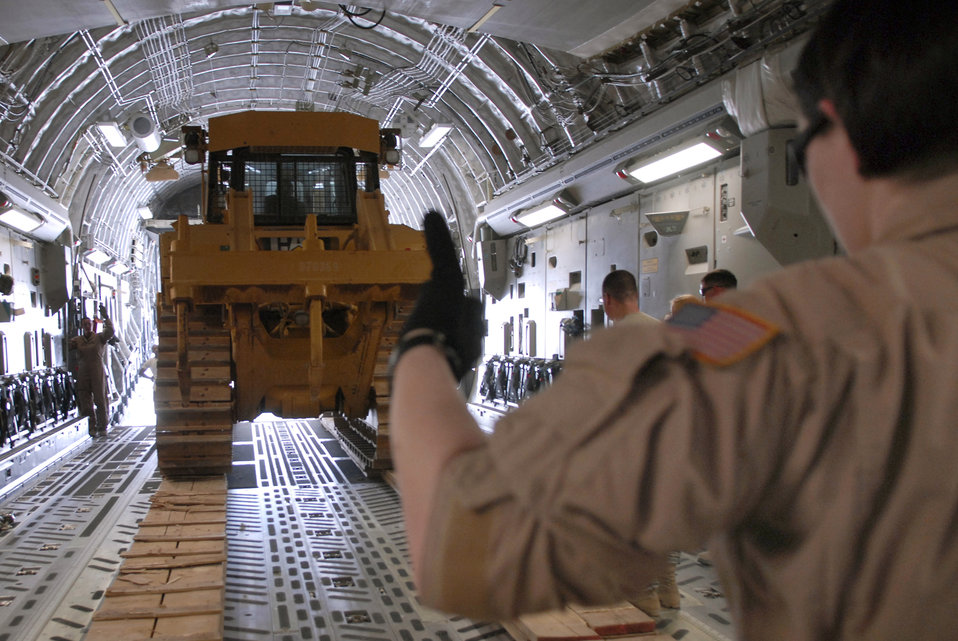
Women's History Month: All-female crew supports warfighters

Technical Sgt. Lori Tascione and Airman 1st Class Summer Toney guide a bulldozer into the cargo bay of a C-17 Globemaster III March 19 at an air base in Southwest Asia. They are part of an all-female flight crew. Sergeant Tascione is a loadmaster from Waddell, Ariz.. Airman Toney is a loadmaster from Long View, Texas. Both are deployed from Charleston Air Force Base, S.C. in support of pperations Iraqi Freedom and Enduring Freedom.